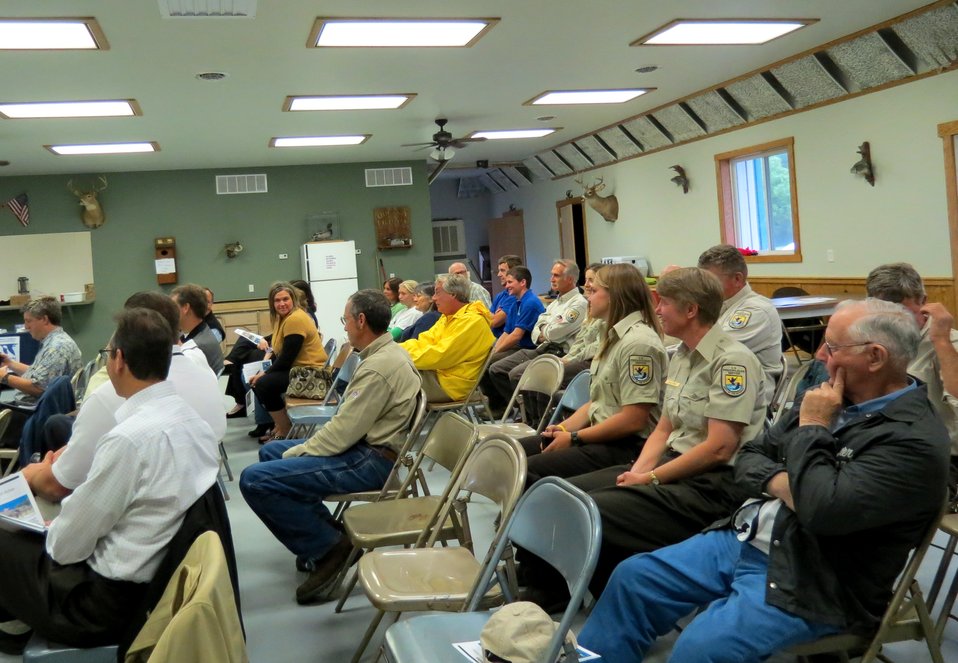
Crowd

Refuge staff, neighbors, community leaders and congressional staffers were among the attendees for the groundbreaking ceremony.